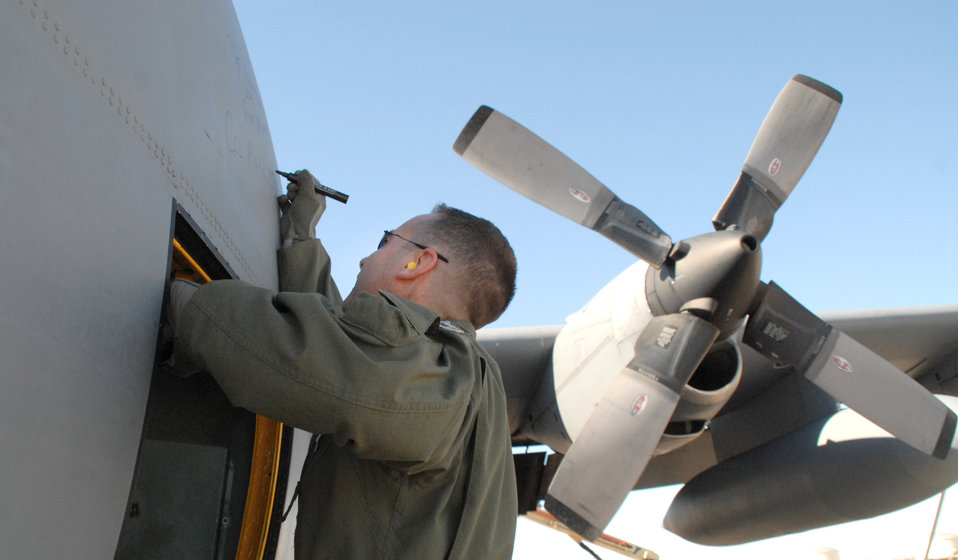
C-130 Retires

Col. Mark Czelusta signs his name on a C-130E Hercules after it completed its final flight Nov. 29, 2010, to Davis-Monthan Air Force Base's 309th Aerospace Maintenance and Regeneration Group in Arizona. It's Air Force tradition for the crew who flies an aircraft's final flight to sign the aircraft after landing. The C-130 was retired as part of an Air Force effort to modernize its C-130 fleet with C-130J and C-130H AMP aircraft. Colonel Czelusta is the 314th Airlift Wing commander and was the aircraft commander for the flight.